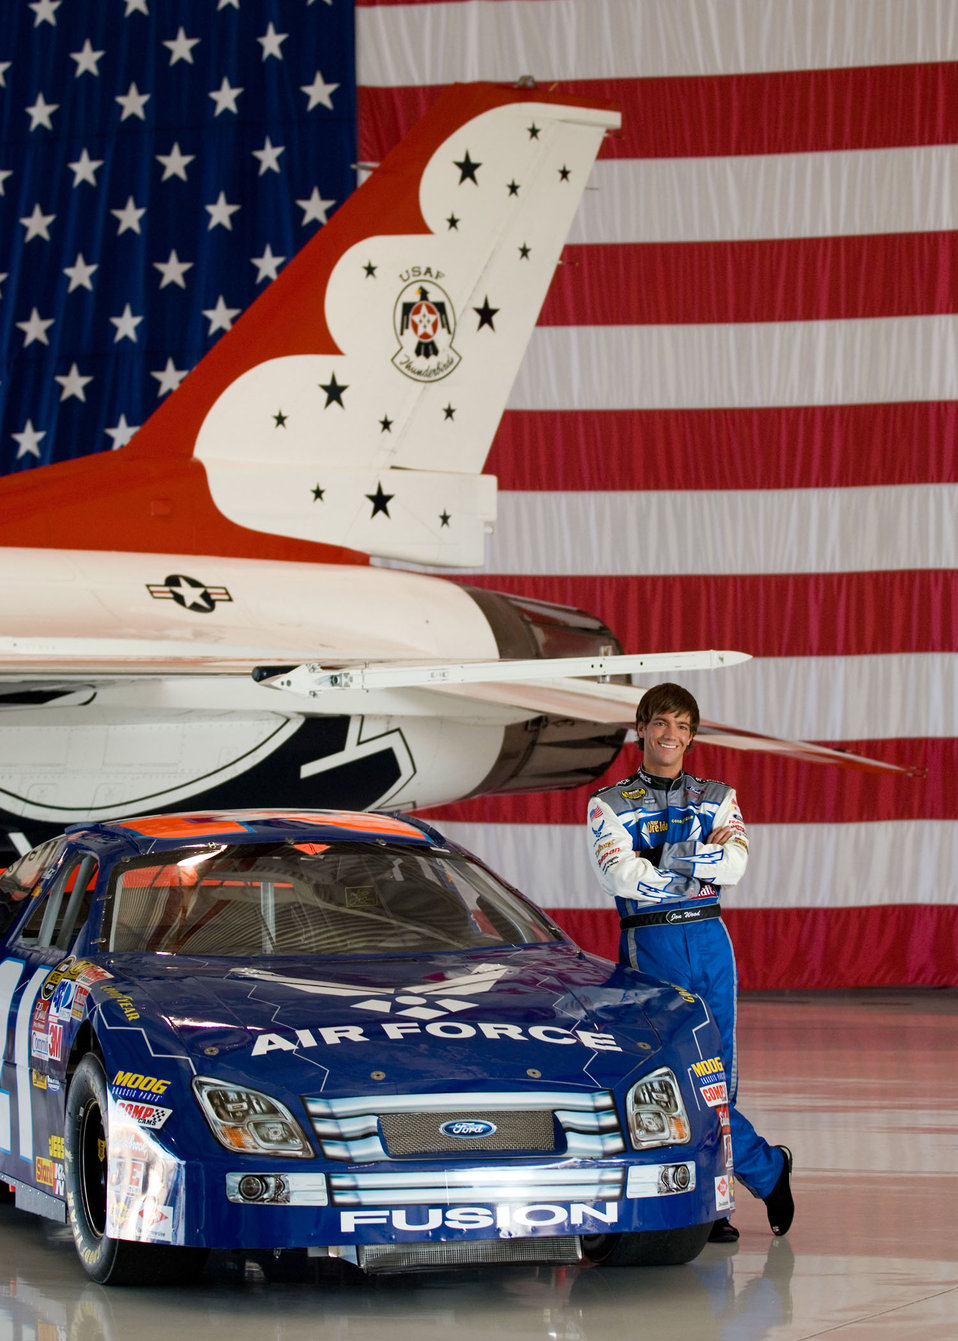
Air Force Racing

Jon Wood, driver of the Air Force car, poses in the Thunderbird hangar at Nellis Air Force Base, Nev., March 8. Wood is at Nellis visiting Airmen before his NASCAR Nextel Cup UAW Daimler-Chrysler 400 race March 10.